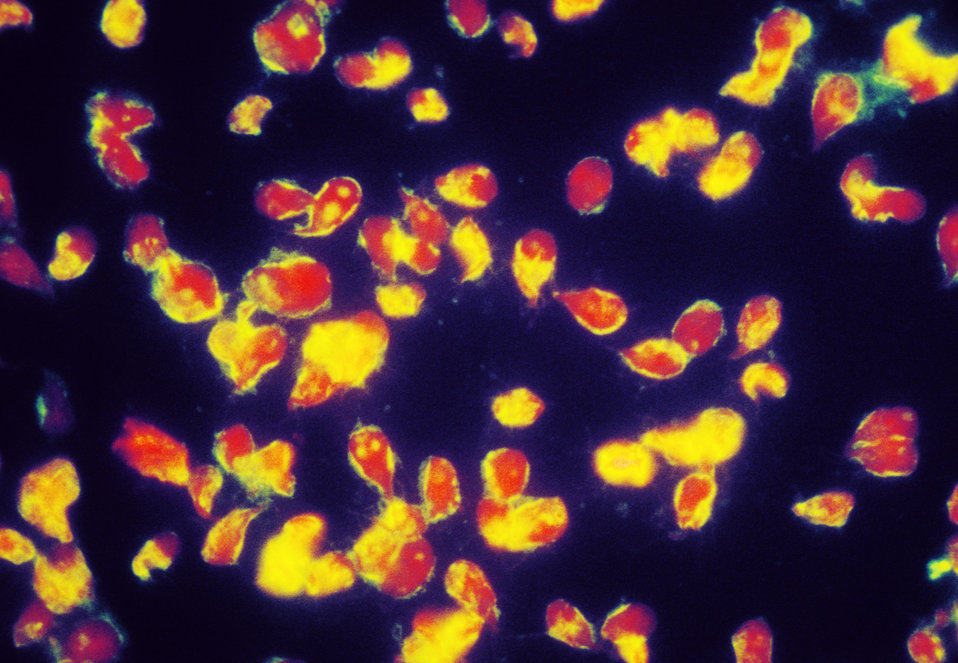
A photomicrograph of a positive indirect immunofluorescence test checking for the presence of Giardia lamblia.